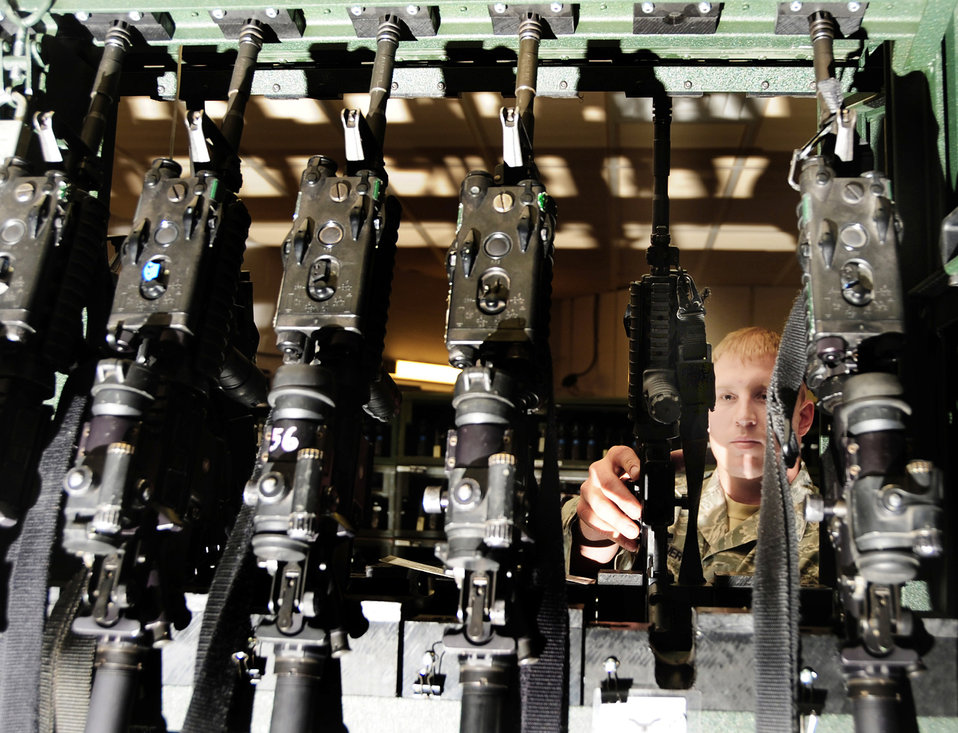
All present and accounted for

Senior Airman Tyler Brunner checks M-4 carbine rifles in the armory April 27, 2010, at Ellsworth Air Force Base, S.D. Airman Brunner is a staff armory Airman with the 28th Security Forces Squadron.